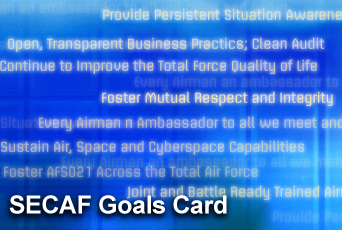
Air Force message fueled with goals card

Secretary of the Air Force Michael W. Wynne is using a